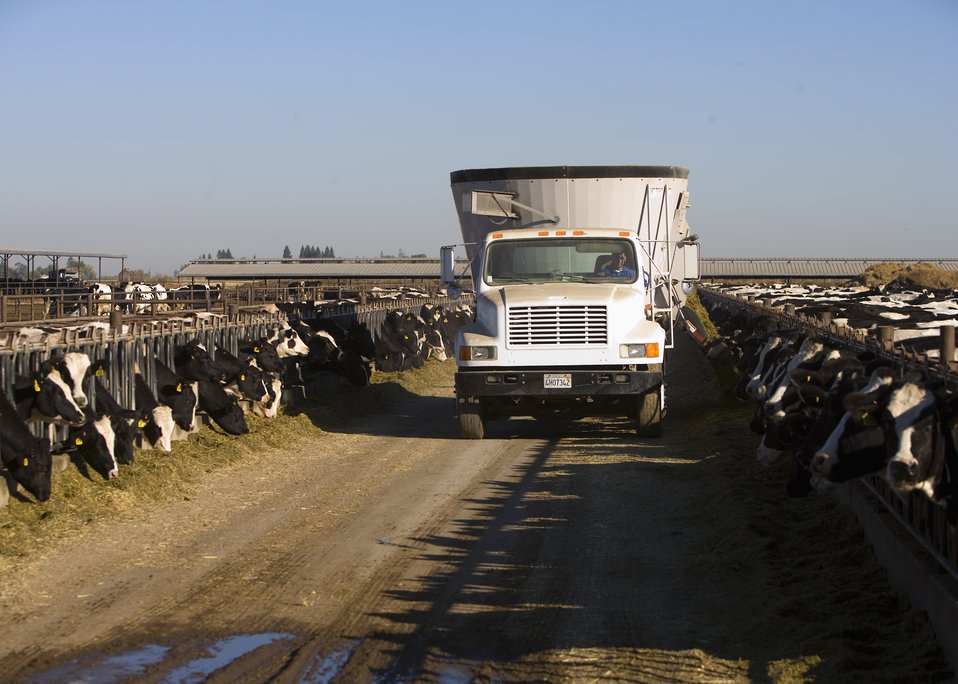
Feeding cows at a farm

A truck feeding cows at a dairy farm in California.